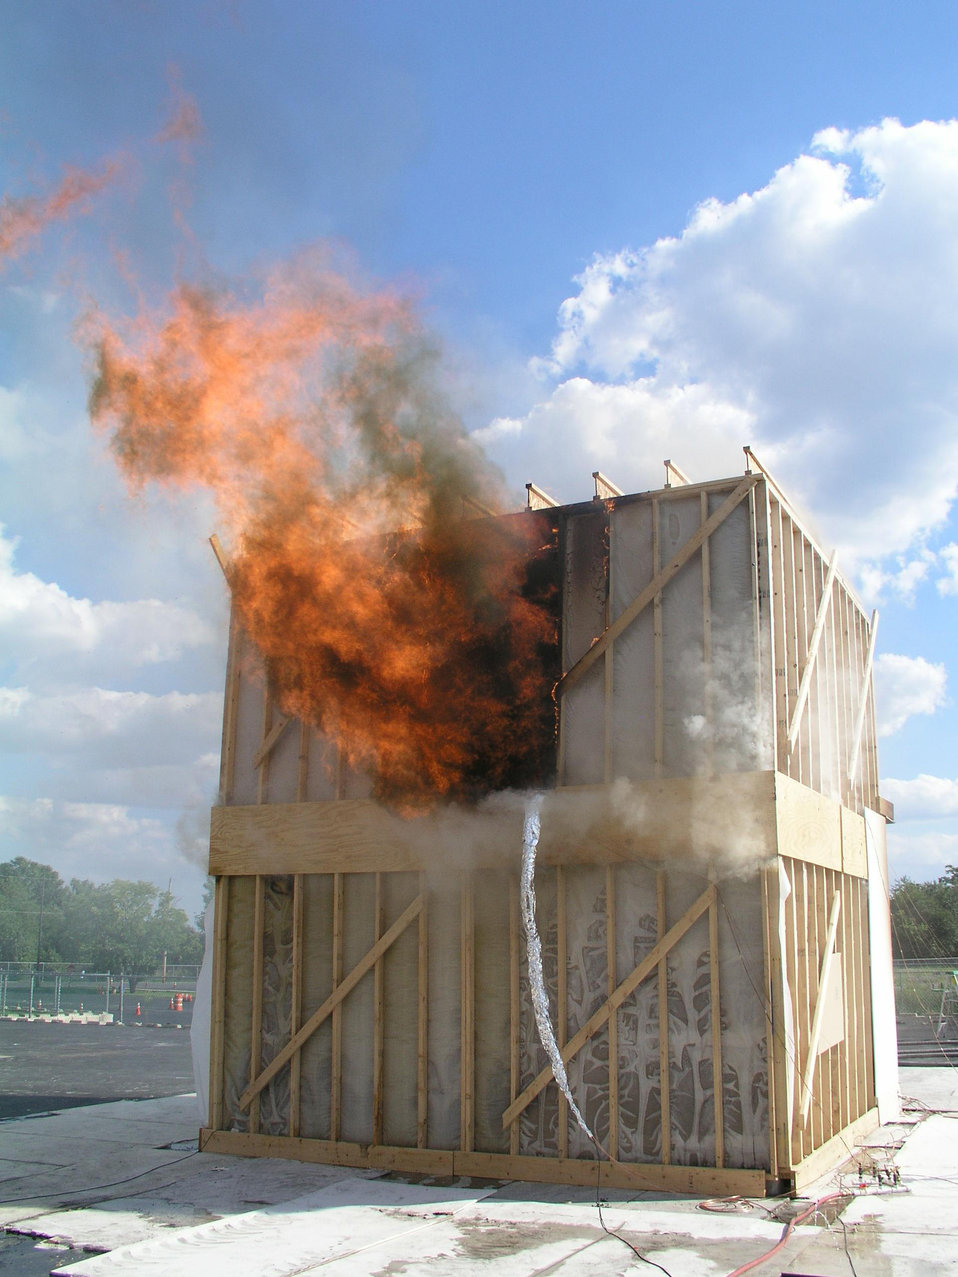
Fire research, structural collapse hazards, warning devices

NIST researchers working at the Delaware County (Pa.) Emergency Services Training Center in Sharon Hill are examining the behavior of fires under floors in residences, and testing devices that could give fire fighters warning of impending collapse. Flames coming out of the first doorway of a test structure after the floor has collapsed into the basement.